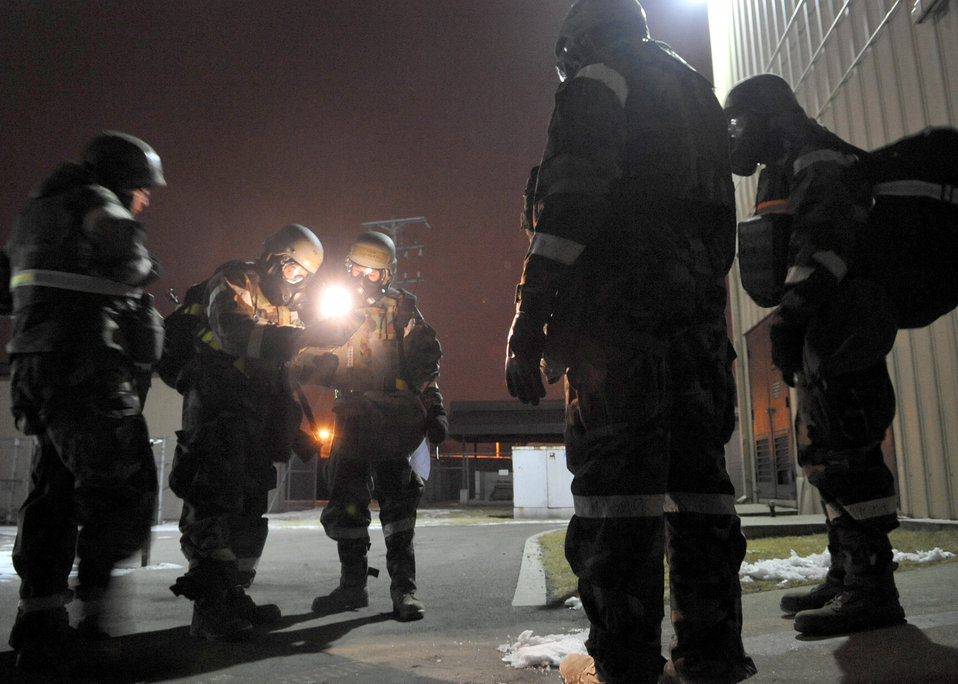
Beverly Bulldog 11-01

Airmen read instructions while conducting a post-attack reconnaissance sweep Jan. 28, 2011, at Osan Air Base, South Korea, as part of Beverly Bulldog 11-01, an operational readiness exercise. Post-attack reconnaissance sweeps are conducted after an attack to survey the area for contamination, unidentified explosive ordnance, casualties or suspicious activity.